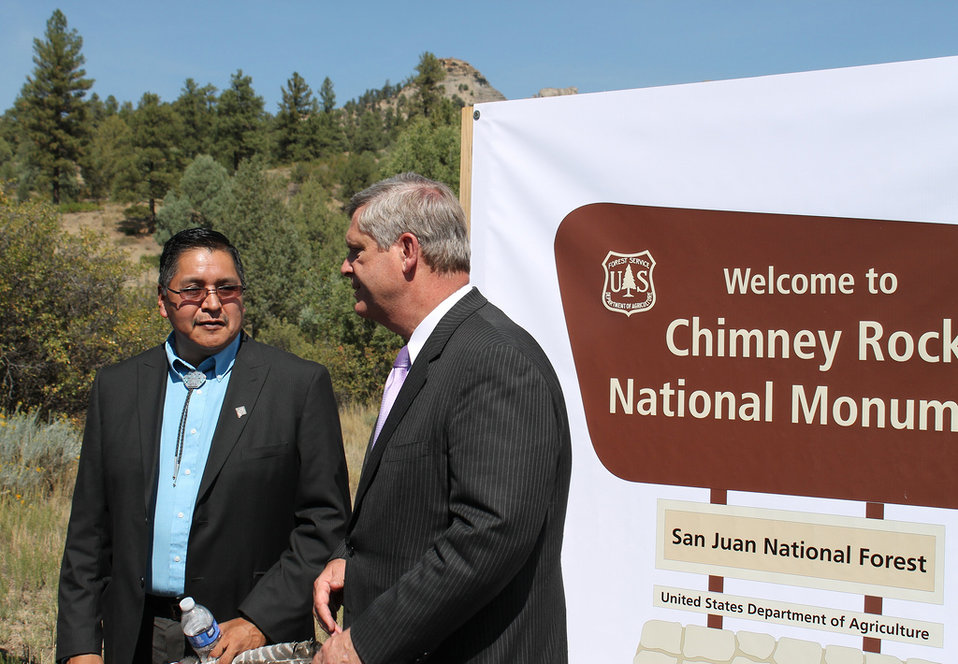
Governor of the Pueblo of Zuni Arlen Quetawki Sr. and Agriculture Secretary Tom Vilsack stand in front of the welcome sign to Chimney National Monument in the San Juan National Forest in Southwest Colorado on Friday, Sept. 21, 2012. Chimney Rock is of great spiritual importance to Pueblos and other Tribes in the southwest corner of Colorado. With its twin sandstone pillars and its massive Chaco- style masonry walls perched 1,000 feet above the Piedra River Valley the monument protects a landscape important to the continuation of traditional cultural practices of the modern Puebloan Indians.